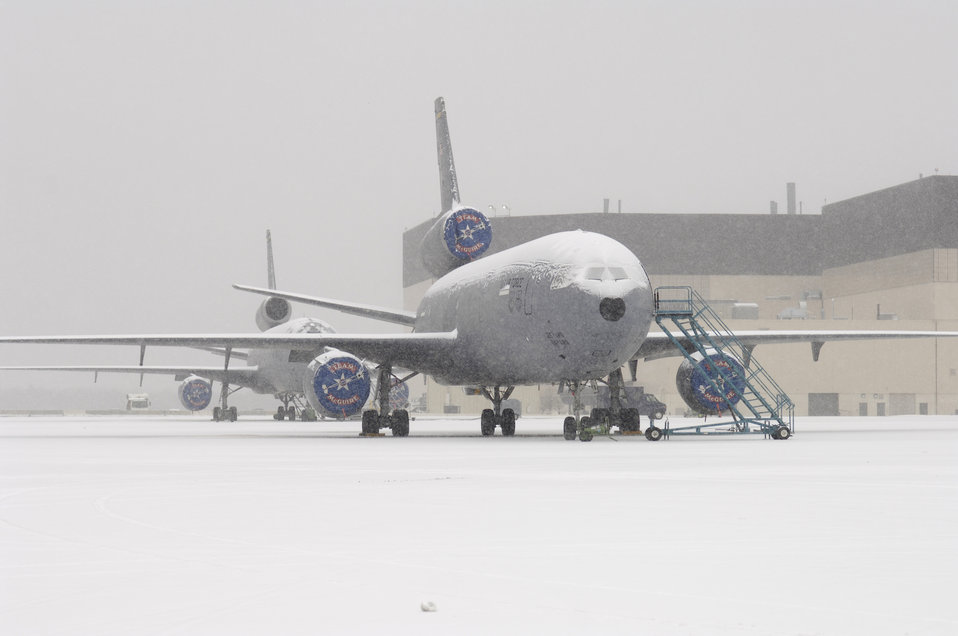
De-ice is nice

A row of KC-10 Extenders sit on the McGuire Air Force Base, N.J., flight line March 7 waiting to be de-iced during a snowstorm that hit the base.